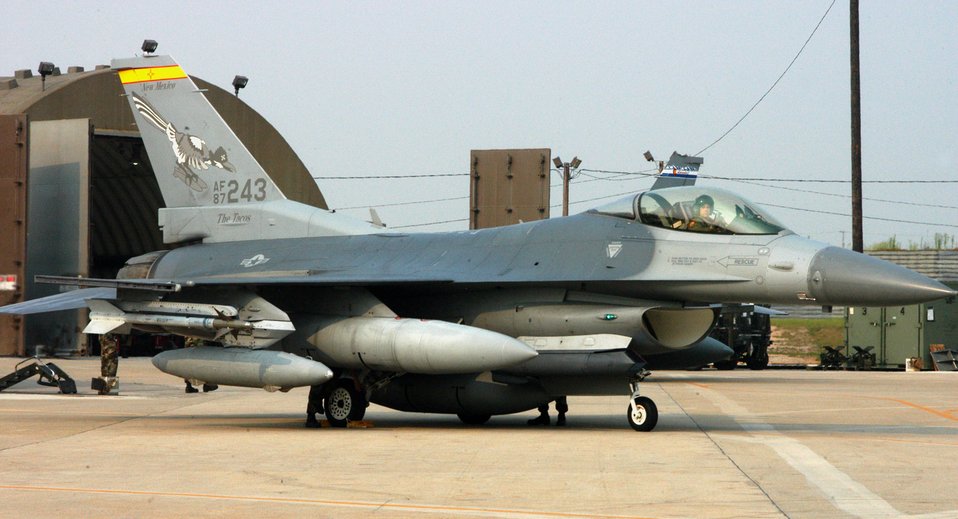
Three F-16 wings deploy to Korea

An F-16 Fighting Falcon from the New Mexico Air National Guard's 150th Fighter Wing parks at Kunsan Air Base, South Korea. Elements of fighter wings from three Air National Guard units have deployed here in support of the air expeditionary force.